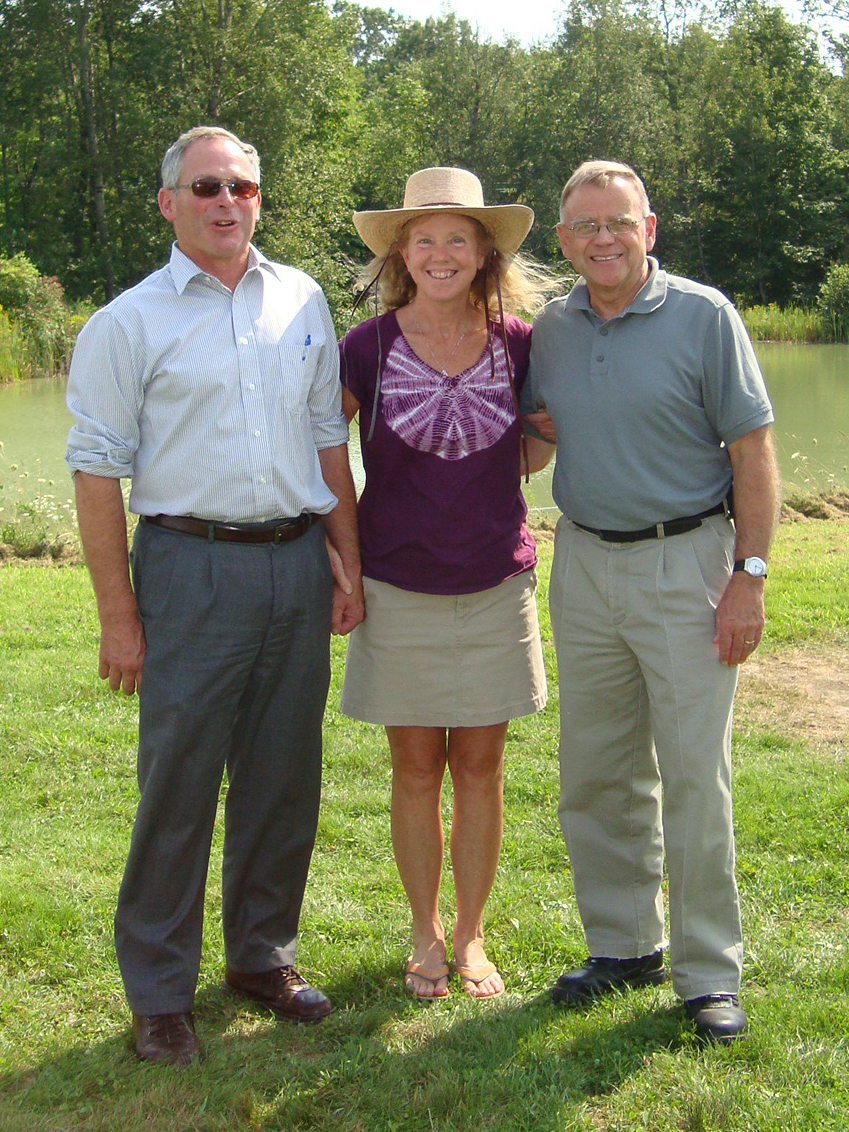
On the Road with Mike Taylor

Maine Commissioner of Agriculture Walt Whitcomb, left, Marilyn Meyerhans, owner of Lakeside Orchards, and FDA Deputy Commissioner Michael Taylor met in Manchester, Maine to discuss food safety. On Aug. 11, 2013, Mike and colleagues embarked on a multi-region tour, including the Pacific Northwest and New England, to get a first-hand look at produce production and irrigation operations, and to discuss the proposed Produce Safety Rule with growers, food industry representatives and state officials. For more about Mike's tour, read these FDA Voice blog posts:

• Hearing the Concerns of Maine Growers Striving for Agricultural Diversity
• On the Road with Mike Taylor: Touring the Pacific Northwest
• On the Road with Mike Taylor, Day 2: Frank Talk in Farm Country
• On the Road with Mike Taylor, Day 3: Families and Partnerships
• On the Road with Mike Taylor, Day 4: Looking to the Future